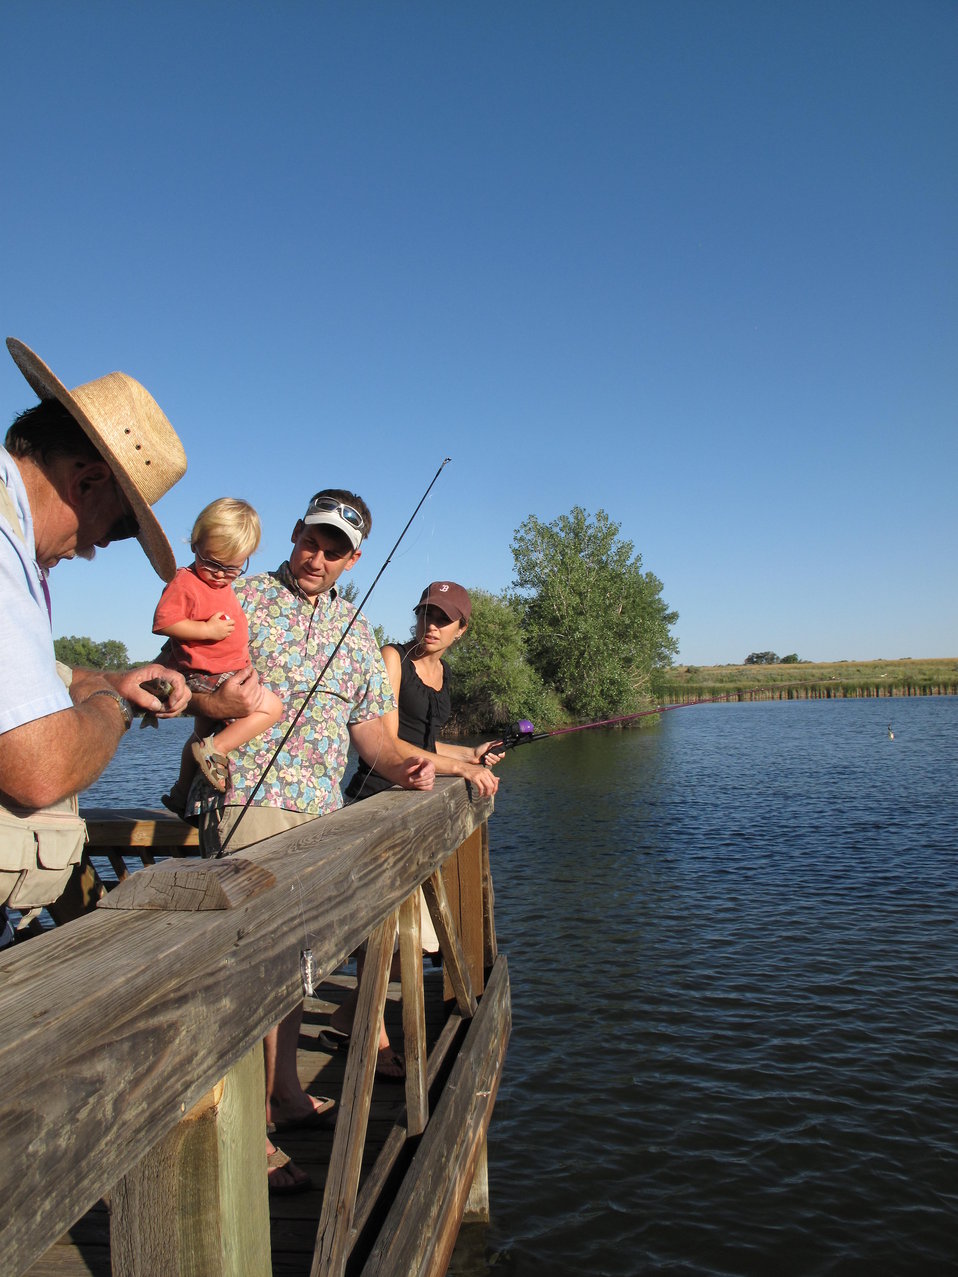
Fishing at the Rocky Mountain Arsenal.